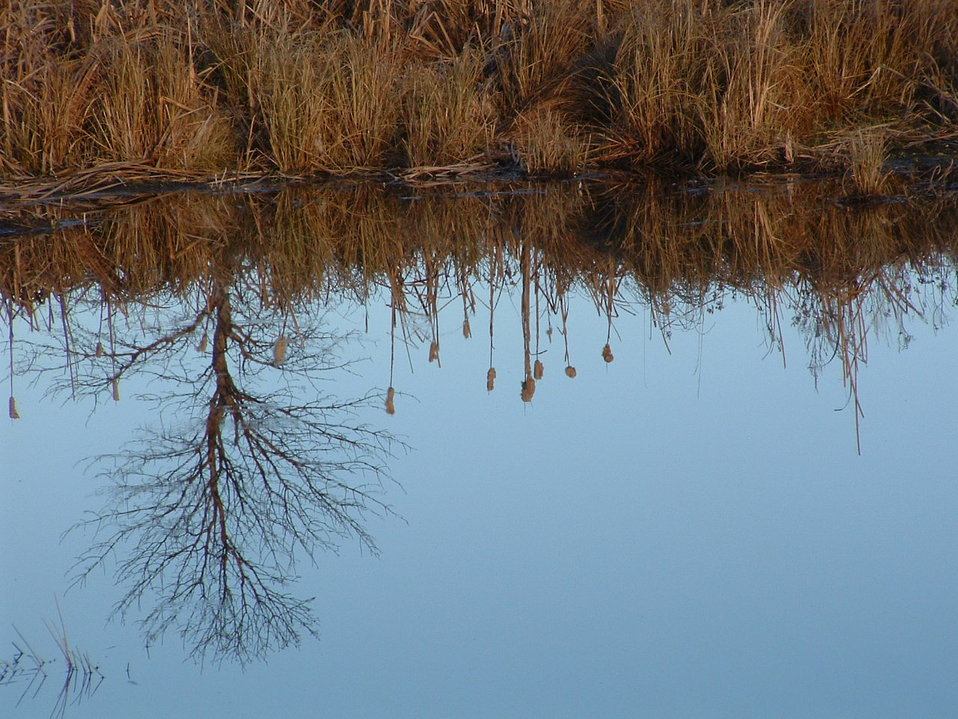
Reflections in a Wetland

Fall vegetation reflected in a Refuge pond at Waubay National Wildlife Refuge.

Credit: Laura Hubers / USFWS, November 8, 2010